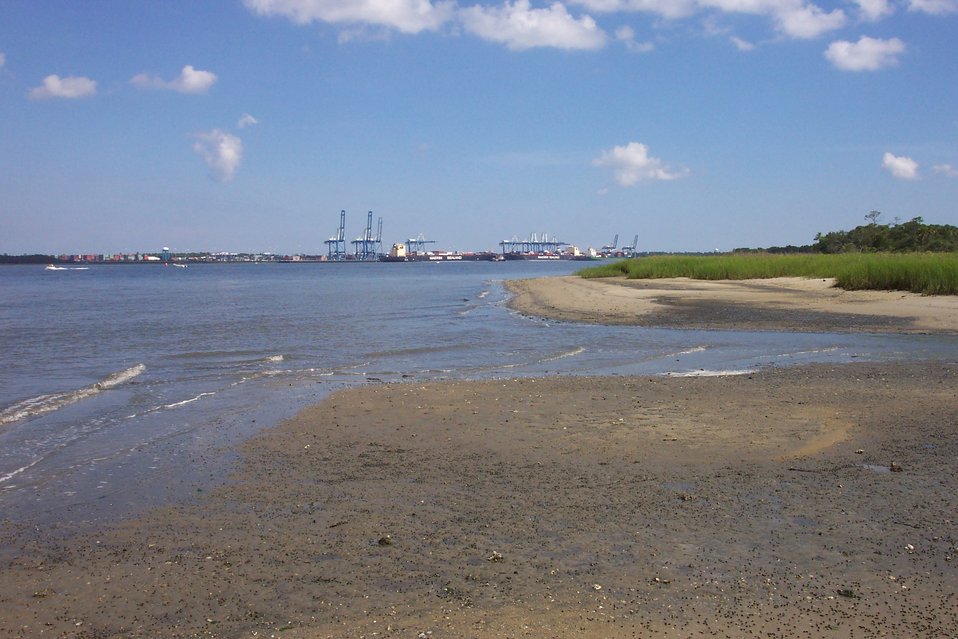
The SEALAND COMMITMENT backing into its berth at the Wando River Container Terminal.